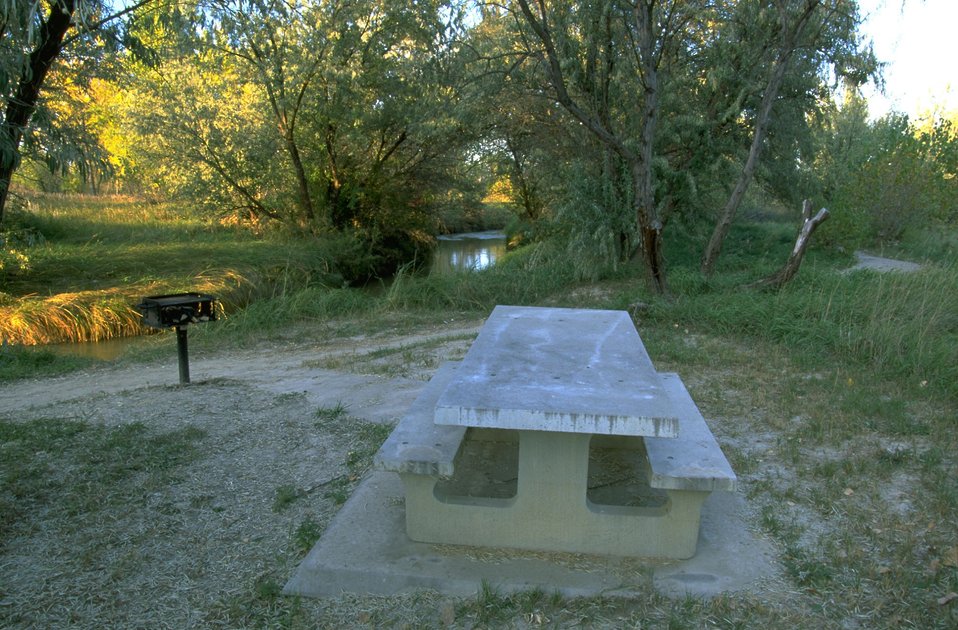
Picnic table and grill along Jones Creek